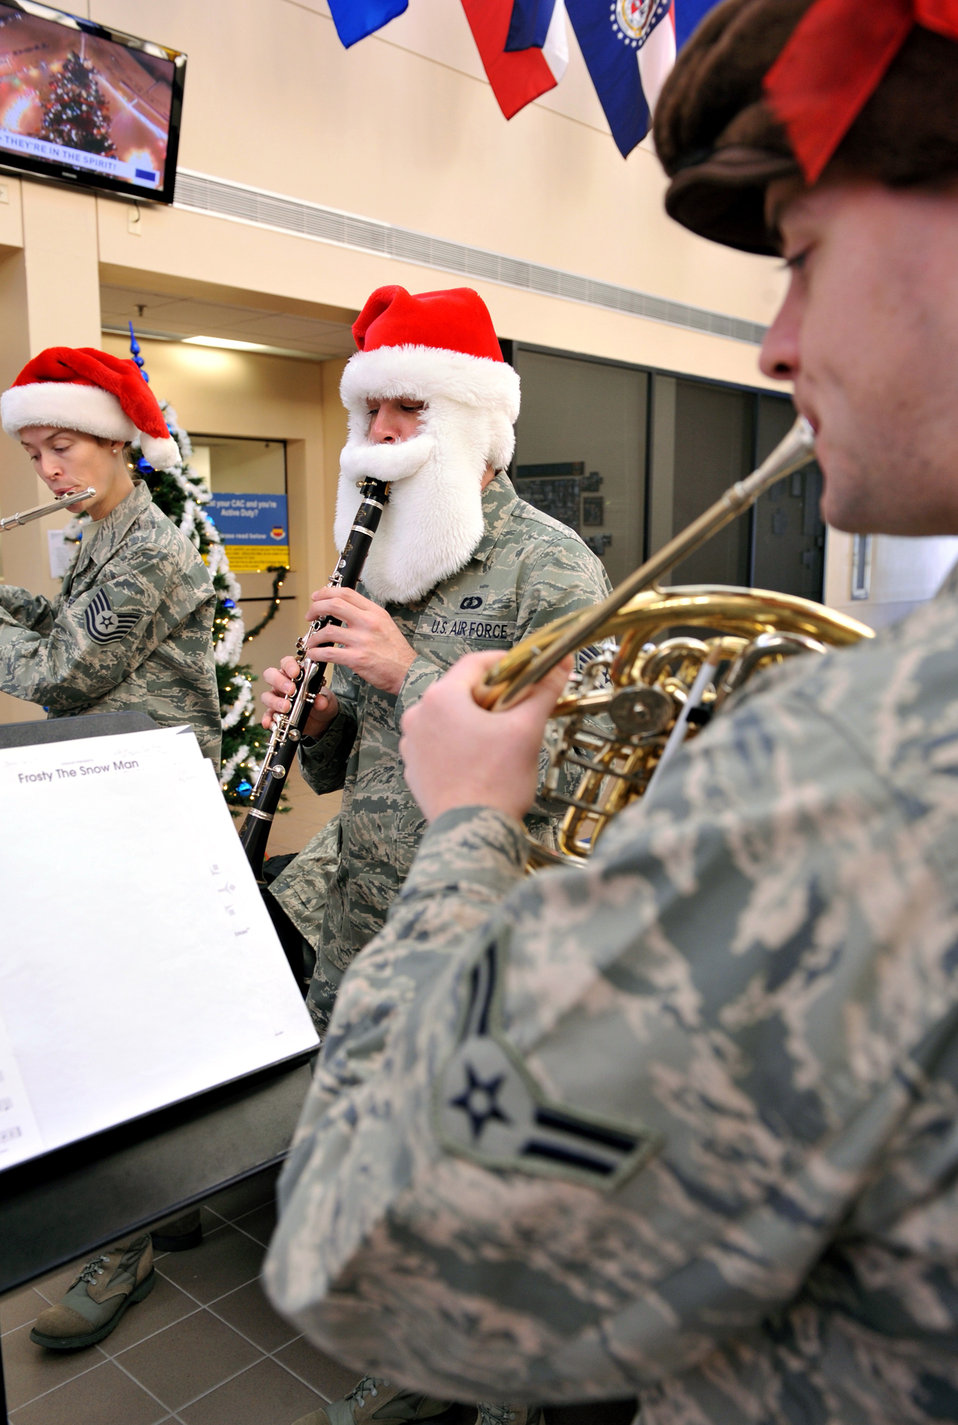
Musical Santa

The Langley Winds perform holiday music at the military processing facility Dec. 15, 2010, near Langley Air Force Base, Va.